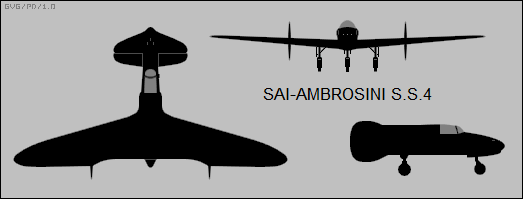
3-view silhouettes of the Ambrosini SS.4